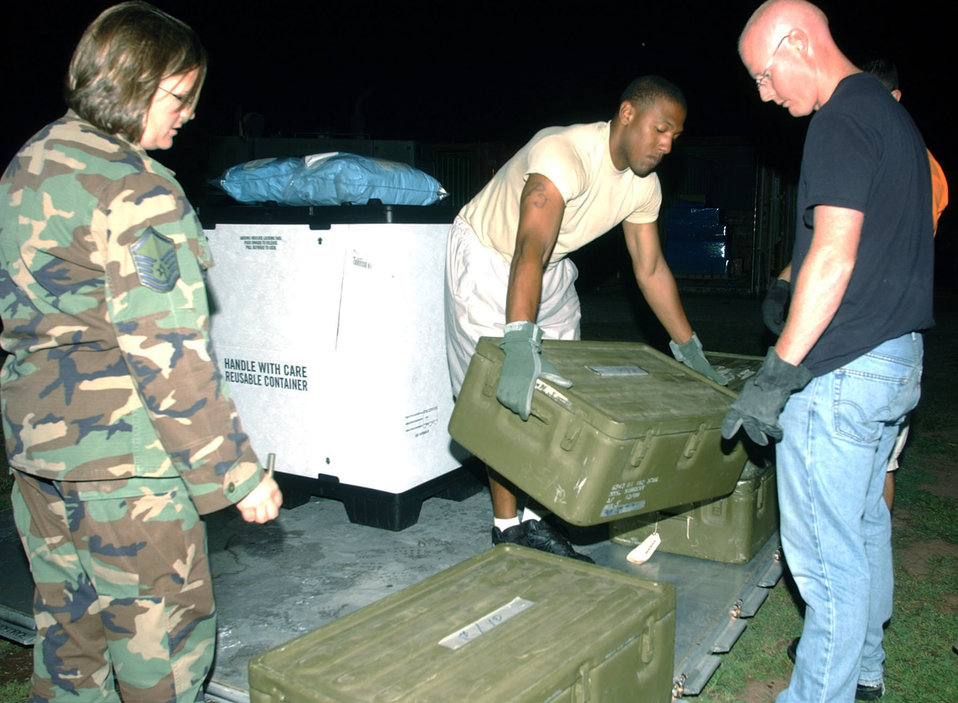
SOUTHCOM medics respond to Peru quake relief efforts

Master. Sgt. Deborah Davis (from left), Army Sgt. Patrick Dickens and Master Sgt. Dan Cockrell pack supplies Aug. 16 at Soto Cano Air Base, Honduras, for the mobile surgical team's deployment to Peru to assist with earthquake relief efforts.